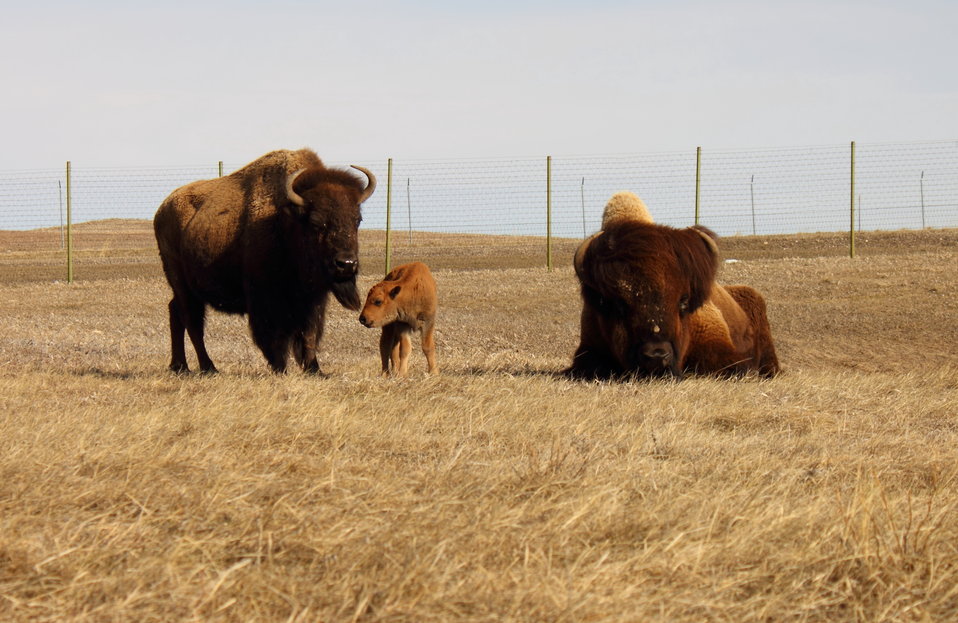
Bison Family on Charles M. Russell National Wildlife Refuge

Pictured above is the bison family in the Charles M. Russell National Wildlife Refuge pasture behind the main office in Lewistown, MT. The calf was born Thursday, April 7th, 2011 and is 4 days old in the photos. The bull and cow bison are Monte, 25 years old, and Cinnamom, 16 years old. In the wild, a 15 year old bull bison is considered fairly old.